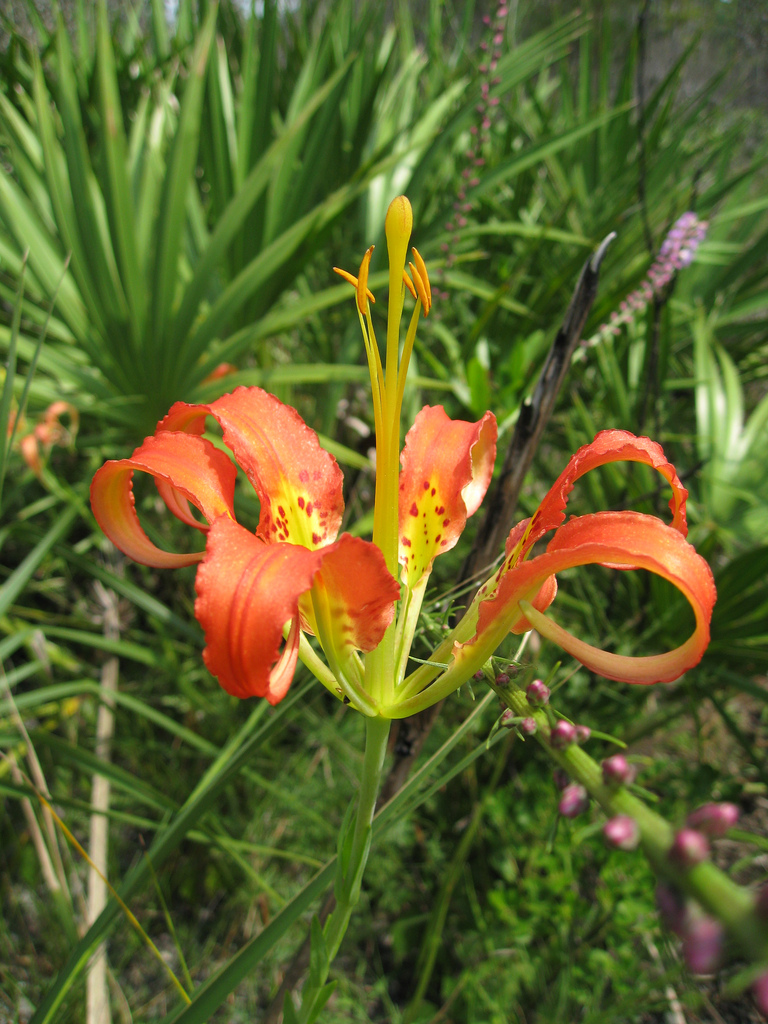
pine lily

St. Marks National Wildlife Refuge, FL